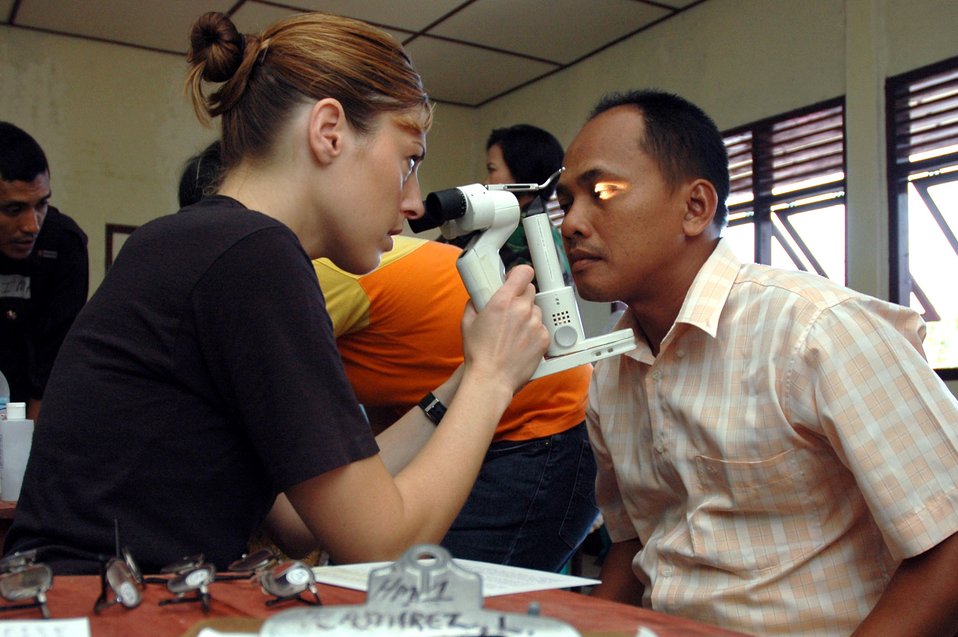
Aboard the USNS Mercy

Capt. Jennifer Owen examines a patient's eyes aboard the U.S. Navy hospital ship USNS Mercy while at a stop at Simeulue Island, Indonesia, on July 15. The Mercy is in the third month of a scheduled five-month deployment, conducting humanitarian and civic assistance in South and Southeast Asia and the Pacific Islands. Captain Owen is one of several Air Force medical professionals on the ship.